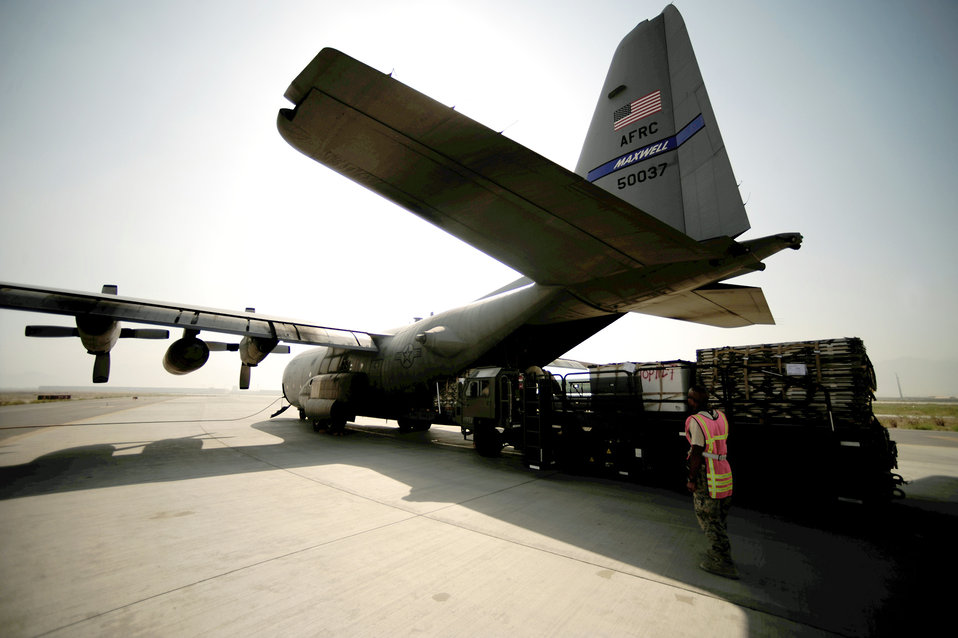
Relief is on the way

Airmen from the 746th Expeditionary Airlift Squadron load aid and supplies onto a C-130 Hercules in support of humanitarian relief efforts in Pakistan Aug. 20, 2010, at Bagram Airfield, Afghanistan.